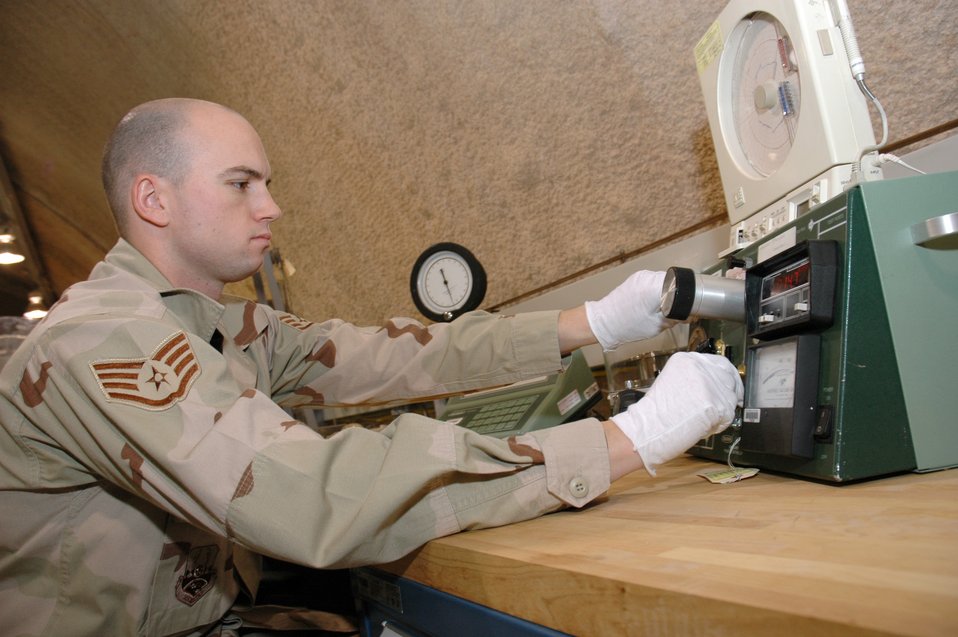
PMEL Airmen ensure equipment is serviceable

SOUTHWEST ASIA (AFPN) -- Staff Sgt. Kenneth Tottle calibrates a pressure gauge used to regulate aircraft tires. He is a precision measurement equipment laboratory technician with the 379th Expeditionary Maintenance Squadron.